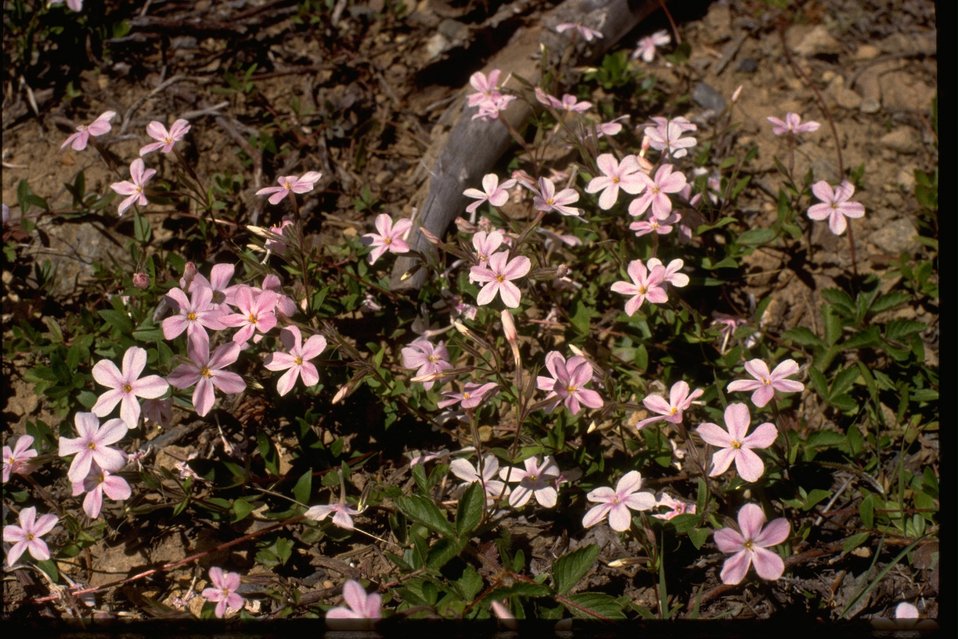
Flower: Spreading phlox.